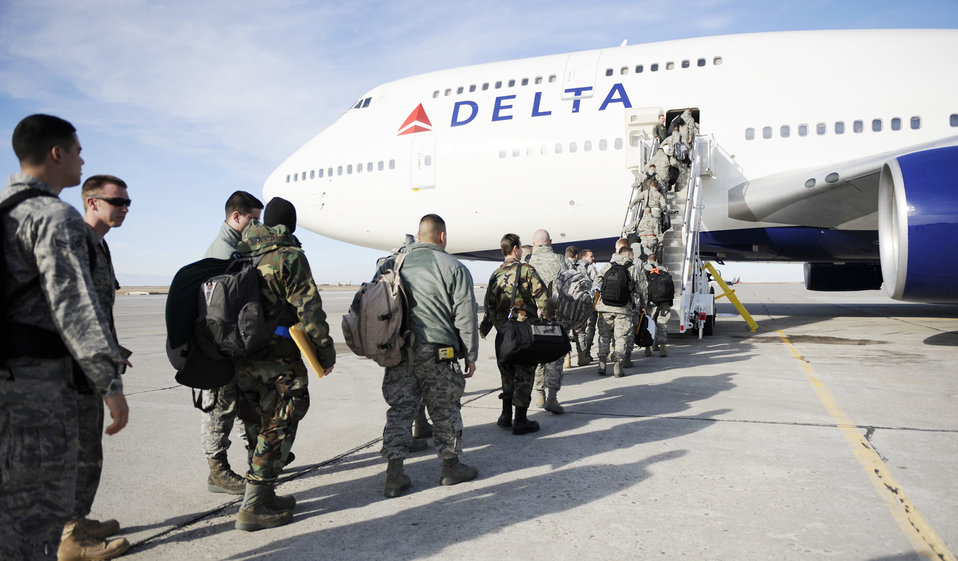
Squadron goes to South Korea

About 300 Airmen with the 391st Fighter Squadron board the commercial transport aircraft for deployment to South Korea, Jan. 18, 2010, at Mountain Home Air Force Base, Idaho. The deployed Airmen will work alongside alliance partners to maintain peace and stability in the region.